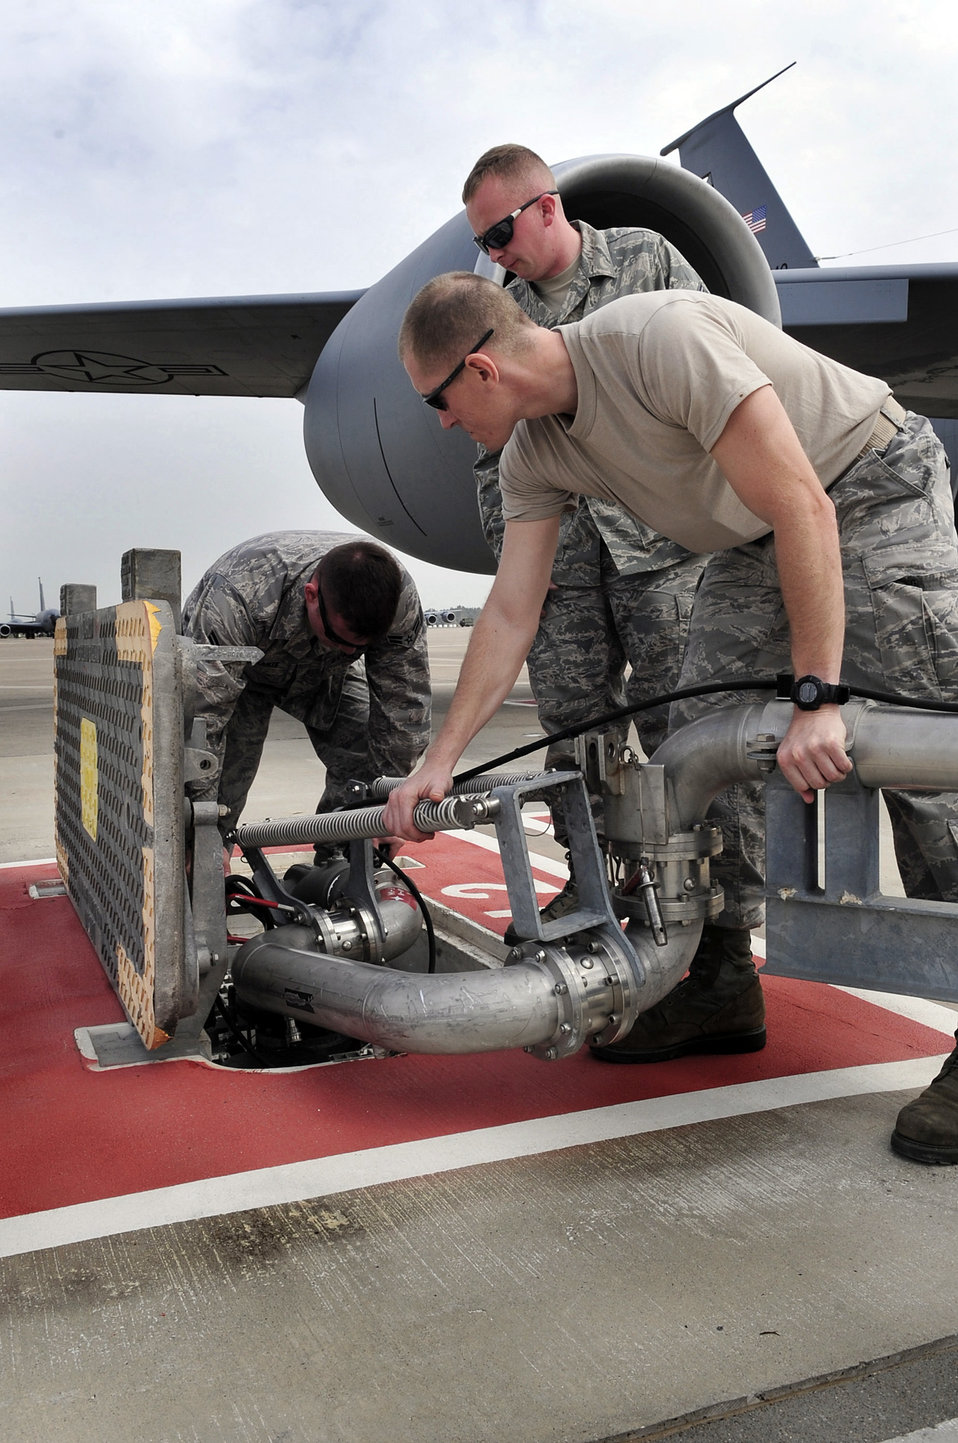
313th AEW Odyssey Dawn

Airmen from the 100th Logistics Readiness Squadron work a pantograph into place to attach it to an underground fuel source to refuel a KC-135 Stratotanker March 25, 2011, at Ramstein Air Base, Germany, in support of Joint Task Force Odyssey Dawn. Joint Task Force Odyssey Dawn is the U.S. Africa Command task force established to provide operational and tactical command and control of U.S. military forces supporting the international response to the unrest in Libya and enforcement of United Nations Security Council Resolution 1973.